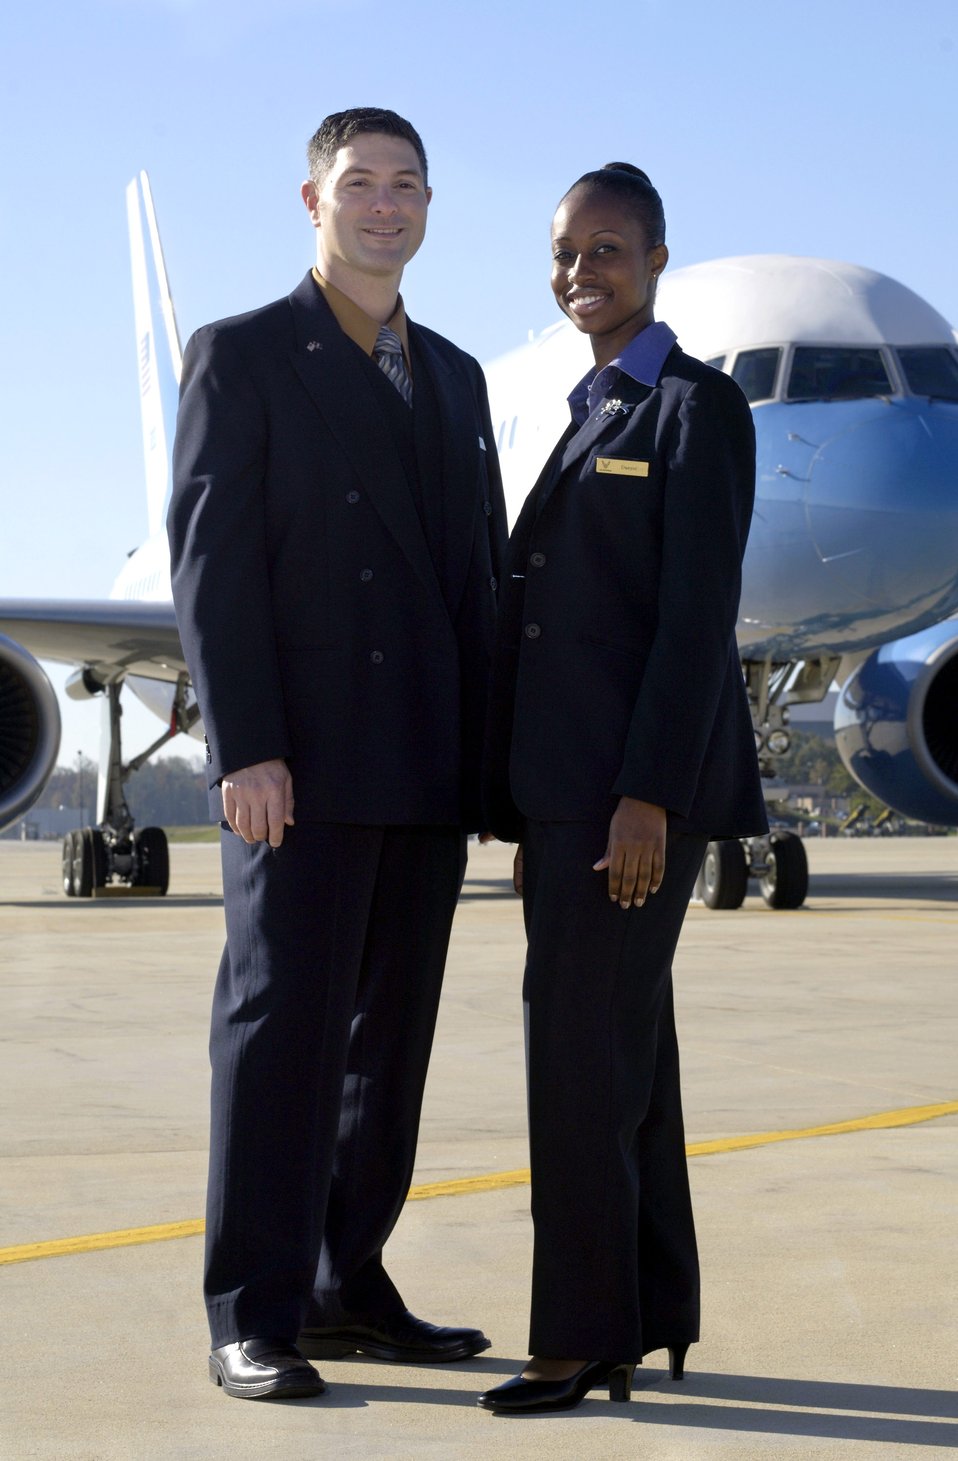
Flight attendants provide world-class service

Tech. Sgt. Pete Kana (left) and Staff Sgt. Danyoi Brown are special air mission flight attendants with the 89th Airlift Wing, Andrews Air Force Base, Md. Sergeant Kana is assigned to the 1st Airlift Squadron. He primarily serves on C-32A aircraft. Sergeant Brown is assigned to the 99th Airlift Squadron and serves primarily on the smaller C-37A aircraft. Though they provide for the overall comfort of their passengers, the top priority of Air Force flight attendants are to ensure the safety of passengers and other crew members on board their aircraft.